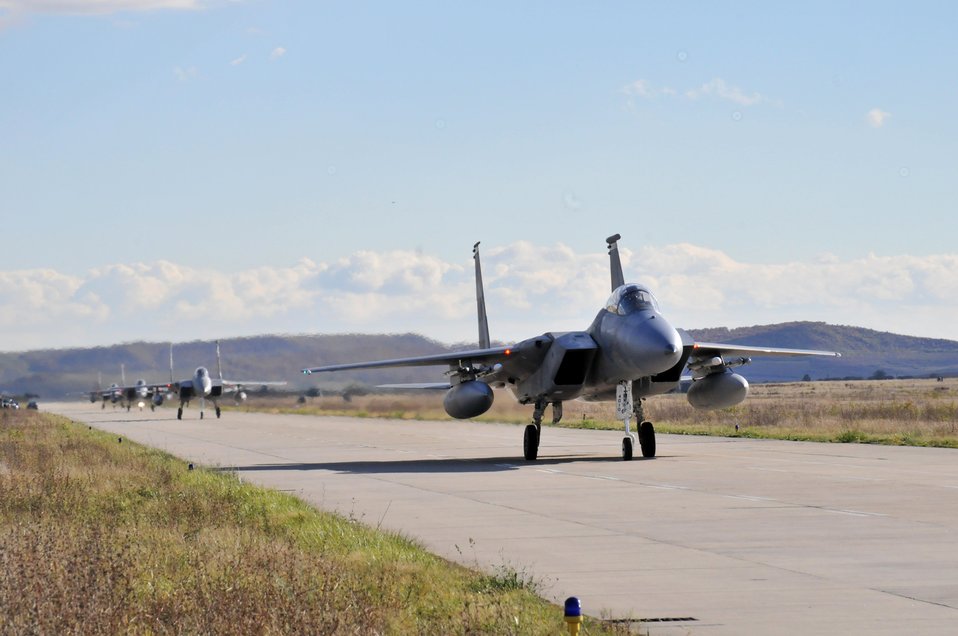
Goldan Lance PB

F-15 Eagle fighter aircraft taxi at Campia Turzii Air Base, Romania, Oct. 21. The aircraft, from the 493rd Fighter Squadron at Royal Air Force Lakenheath, England, came to Romania to participate in Operation Golden Lance, an exercise designed to build partnerships and increase interoperability between NATO allies.